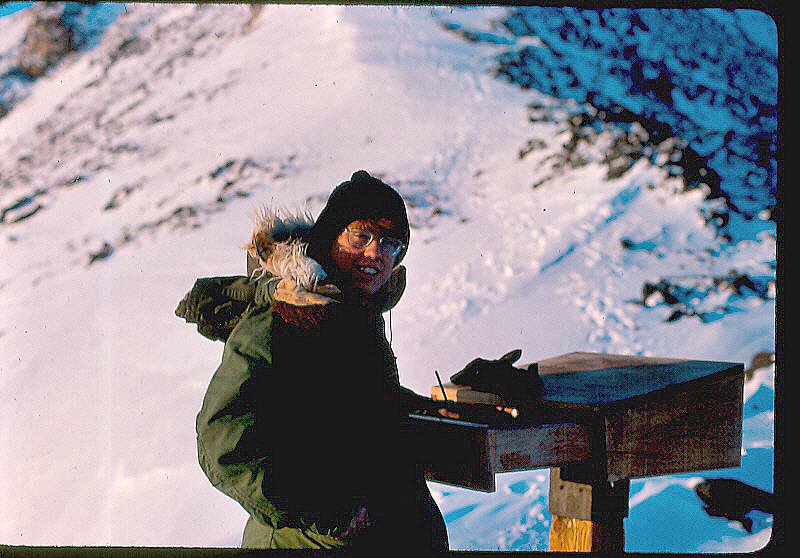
Mike St Ours

Mike St. Ours, Physical Science Technician/Marquette Biological Station in Region 3, served in the U.S. Navy during 1976-1980 as a Weather Observer with the Naval Support Force and participated in Antarctica 'Operation Deep Freeze.” He began his military career shortly after his 18th birthday, and the personnel officer told him he was the youngest American to set foot in Antarctica.